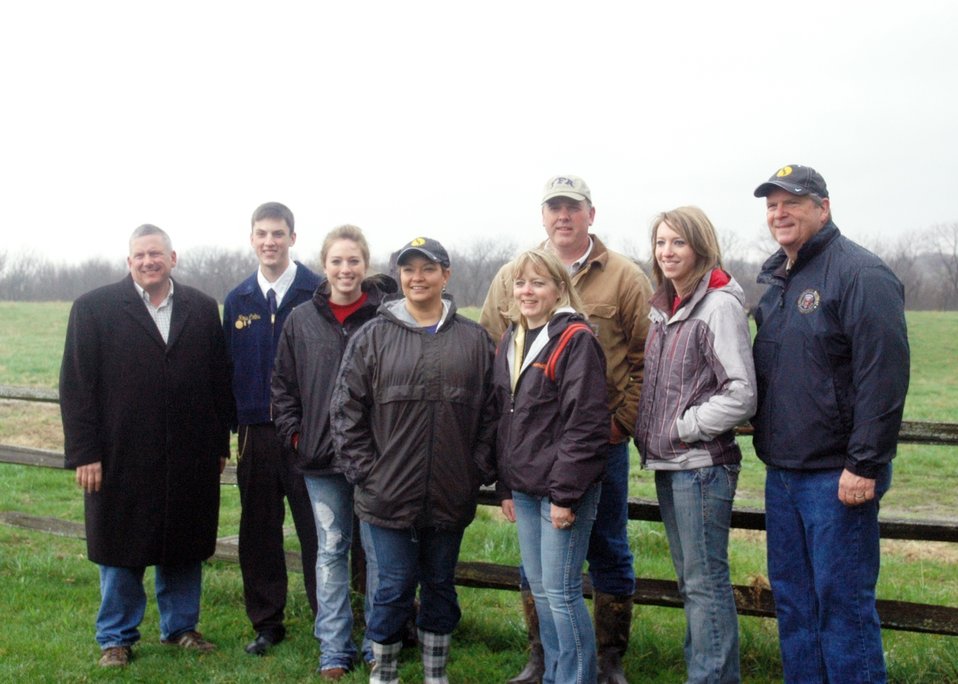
EPA, USDA, Iowa Dept of Agriculture group photo at Collins Farm, IA

Left to right Iowa Secretary of Agriculture Bill Northey, Ross Collins, Trish Collins, Enviornmental Protection Agency Administrator Lisa P. Jackson, Renee Collins in front Monty Collins, Keisha Collins and Agriculture Secretary Tom Vilsack. The group was in front of the pasture used for rotational grazing on the Collins Farm, in Marshalltown, IA.